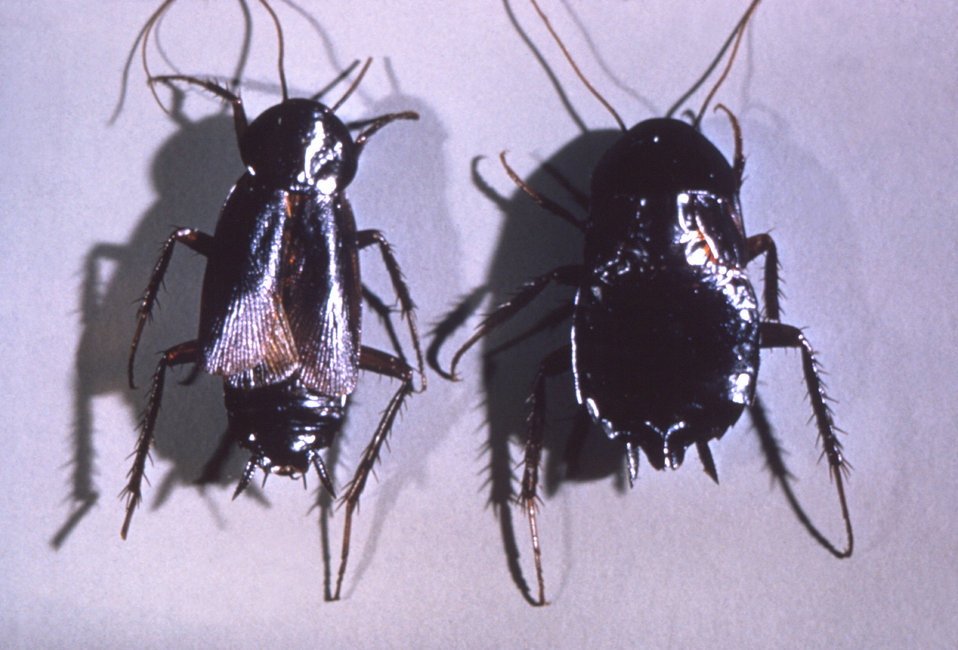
These Oriental cockroaches, Blatta orientalis, were photographed during a study of migrant labor camp disease vectors.